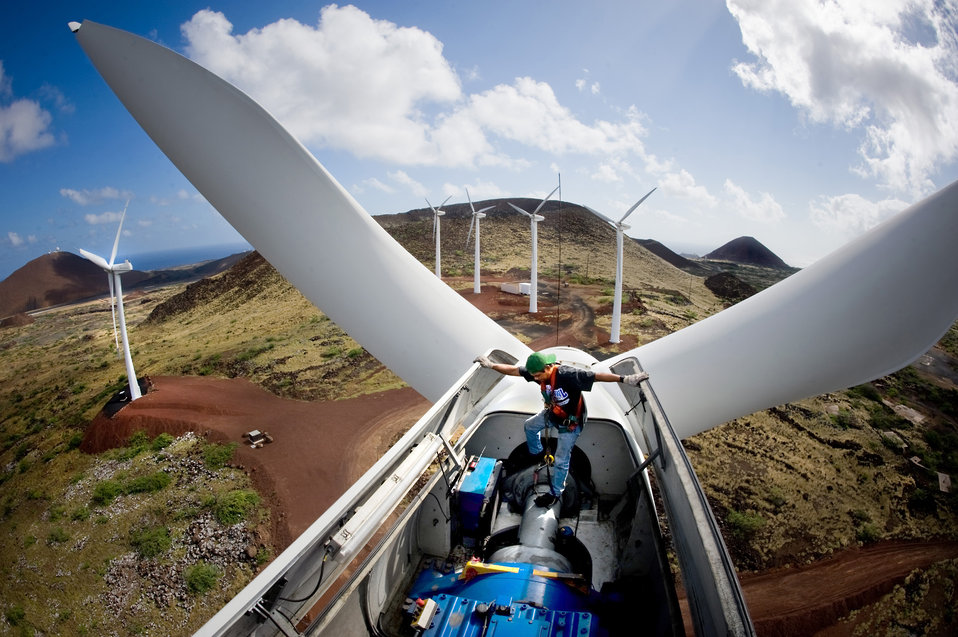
Ascension Island Green Way

Mr. Damien Cuello takes a moment to get acclimated to his high work area and then performs operational checks of the spinning rotor blades and drive line of the 900kW wind turbine at 45th Operations Group Detachment 2, Ascension Auxiliary Airfield (AAF), South Atlantic Ocean on June 25, 2009. The unit sits atop a 110 foot tower that holds the power generation components. It takes only a few seconds for the disk brake to stop the 20-ton three-bladed 182-foot rotor from turning in the wind. This is part of the self sufficient, power,water and waste infrastructure of the base. Mr. Cuello is a power house operator/ mechanical associate with Computer Sciences Raytheon, responsible for maintenance of the 6-wind turbine facility. The wind turbines works in parallel with low-load diesel generators powering the airfield, Space Command sites and facilities, and a royal air force airfield facility. Ascension AAF's award winning self-sufficiency solutions also includes drinking water production and waste water treatment. The mission of Det. 2 is support of eastern range space launches by collecting and disseminating radar, telemetry and tracking data. Ascension island is 35 square miles in a remote island location midway between Brazil and Angola. The nearest country is Liberia - 1000 miles away.